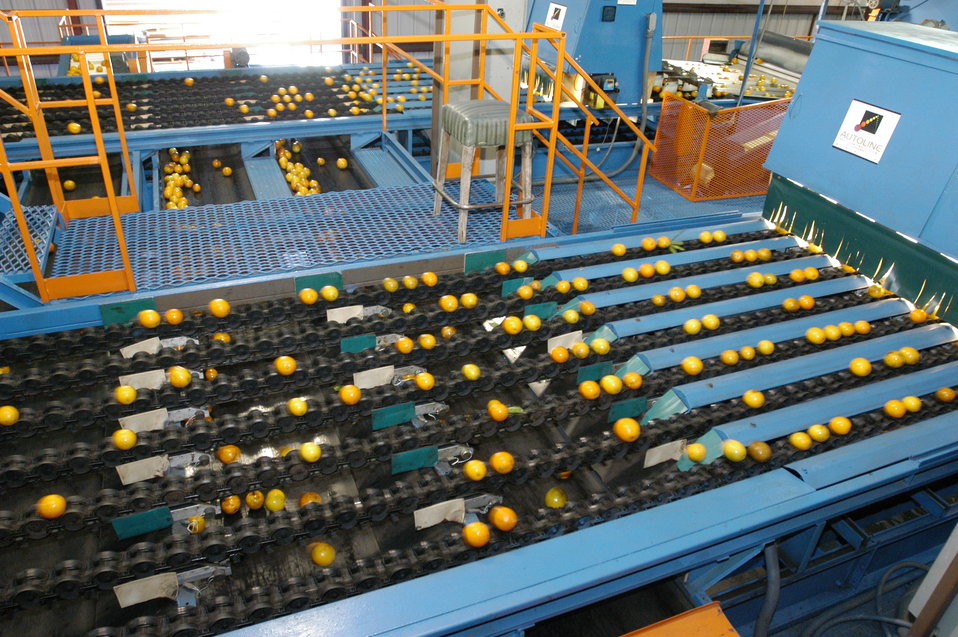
Oranges are processed at the Seald Sweet processing plant in Vero Beach, Florida on February 10, 2006. A trailer load of oranges is weighed on scales in order to determine the weight of fruit received, which will be used to base the payment to the grower. The oranges are unloaded onto a conveyor belt and from this belt the Florida Department of Agriculture and Consumer Services (FDACS) takes a representative sample to test it for juice content, maturity, and to certify the pounds solids per box (the unit that growers' payment is based upon). The fruit is then diverted to storage bins labeled according to the juice specification as determined by FDACS. The fruit is conveyed by belt through a washing process and enters the processing plant where it is graded for bad or damaged fruit. The fruit is then separated by size and sent to the juice extractors. Before juicing, the peel is pricked to extract the oils found in the peel and then the juice is extracted.